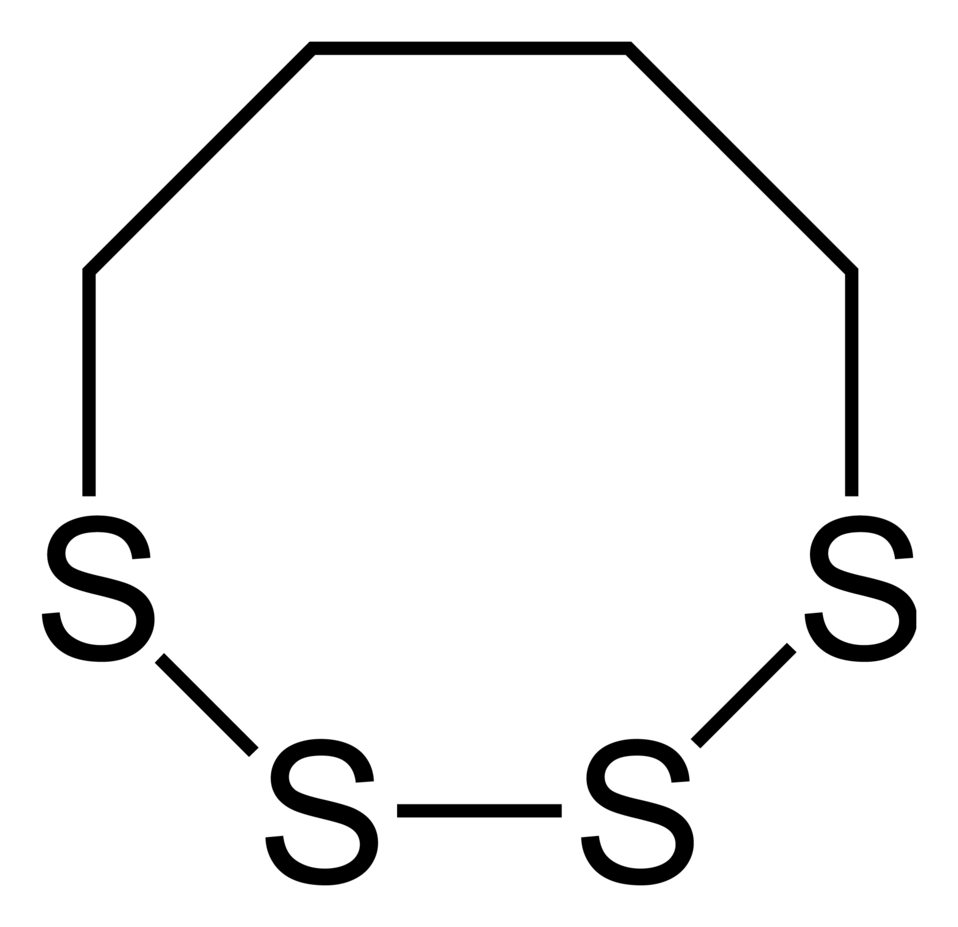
Skeletal formula of the 1,2,3,4-tetrathiocane molecule, C4H8S4.